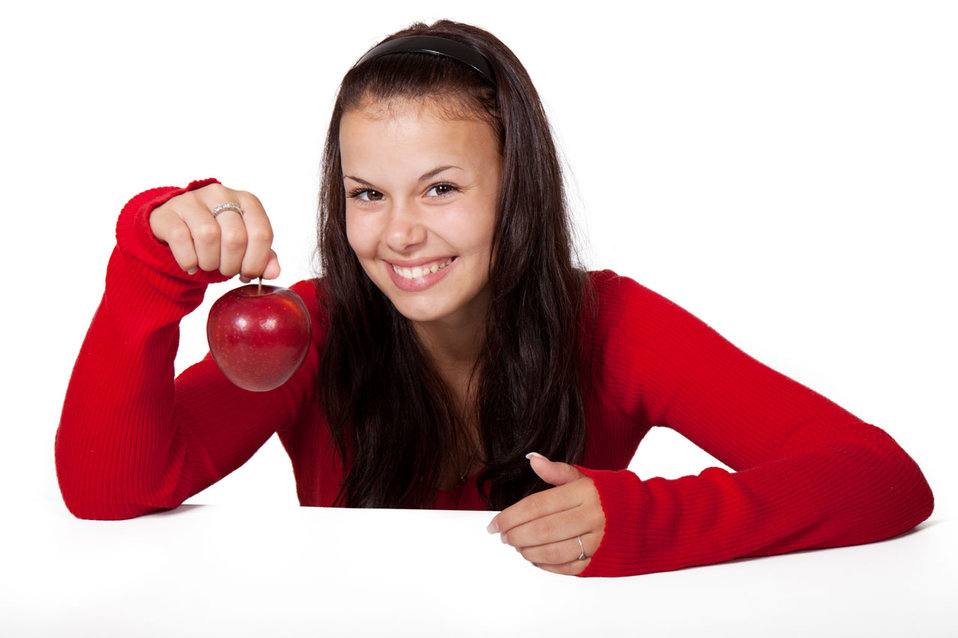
Woman with red apple

Young woman holding a red apple.